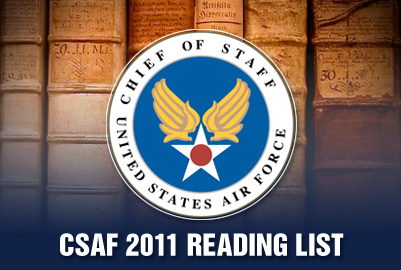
CSAF 2011 Reading List